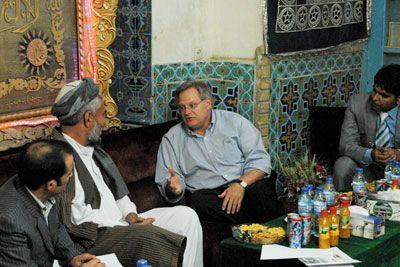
Assistant Secretary Schwartz Speaks With Mosque Director Atiqullah Ansari

U.S. Assistant Secretary of State for Population, Refugees, and Migration Eric Schwartz speaks with Mosque Director Atiqullah Ansari at the Blue Mosque in Mazar-e-Sharif, Afghanistan, on October 11, 2010.